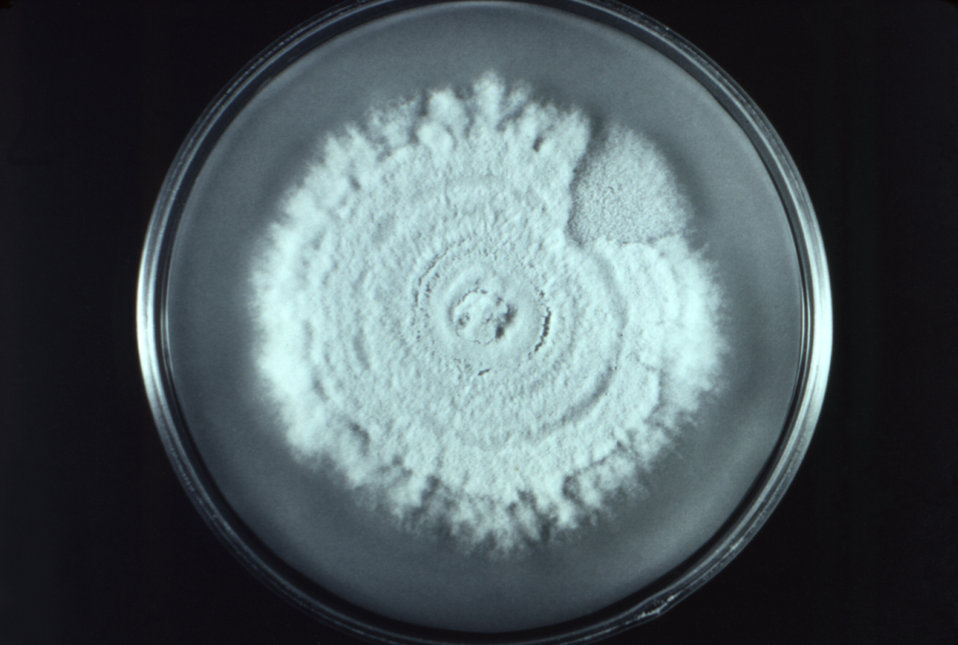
This 1961 photograph depicted a Petri dish in which a colony of Beauveria bassiana fungal organisms were being cultivated. Beauveria spp. are found growing in soils throughout the world. It is known to infect many insects that come into contact with the fungal spores, and has been identified as the causative agent in silkworm muscardine disease.